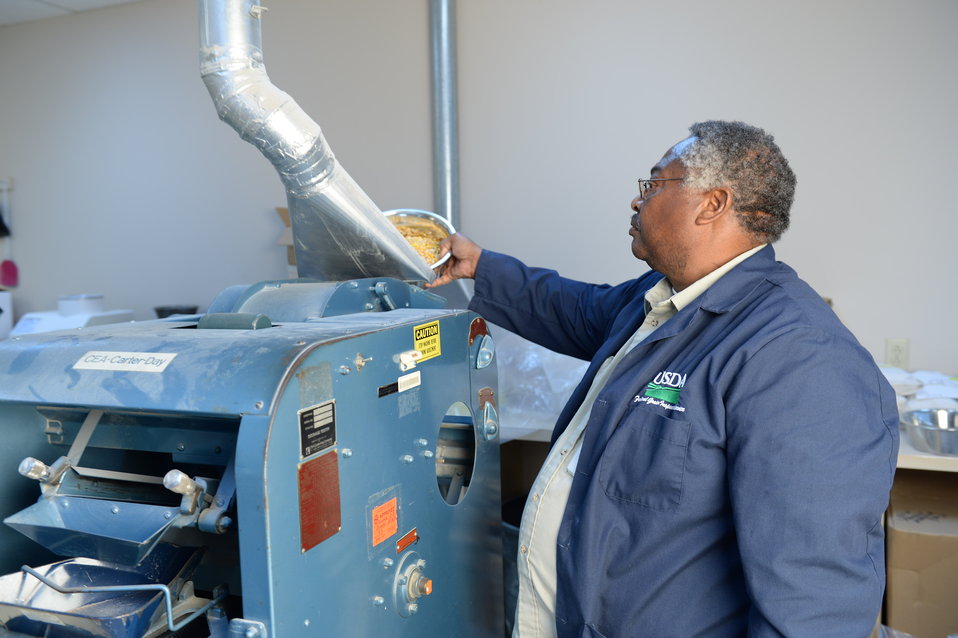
A U.S. Department of Agriculture (USDA) Grain Inspection, Packers and Stockyards Administration (GIPSA) Federal Grain Inspection Service (FGIS) scientist tests corn at the FGIS inspection laboratory in New Orleans, LA on Monday, Nov. 18, 2013.